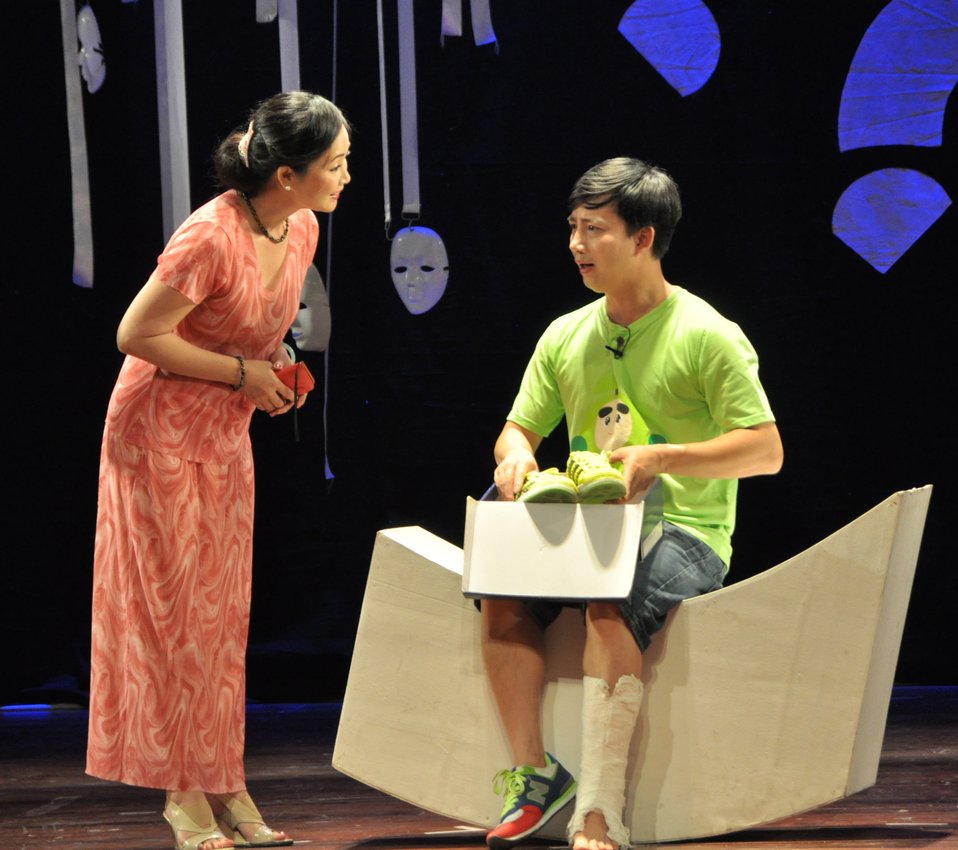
PEPFAR Musical Questions and Exclamations

Hanoi, May 17, 2013